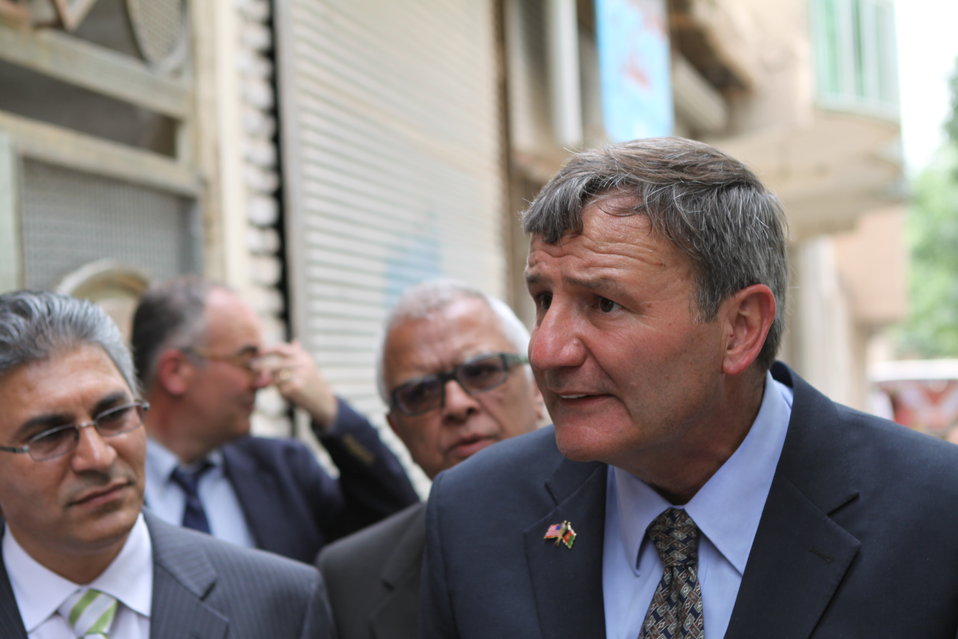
100525 Hirat Marble Conference 700